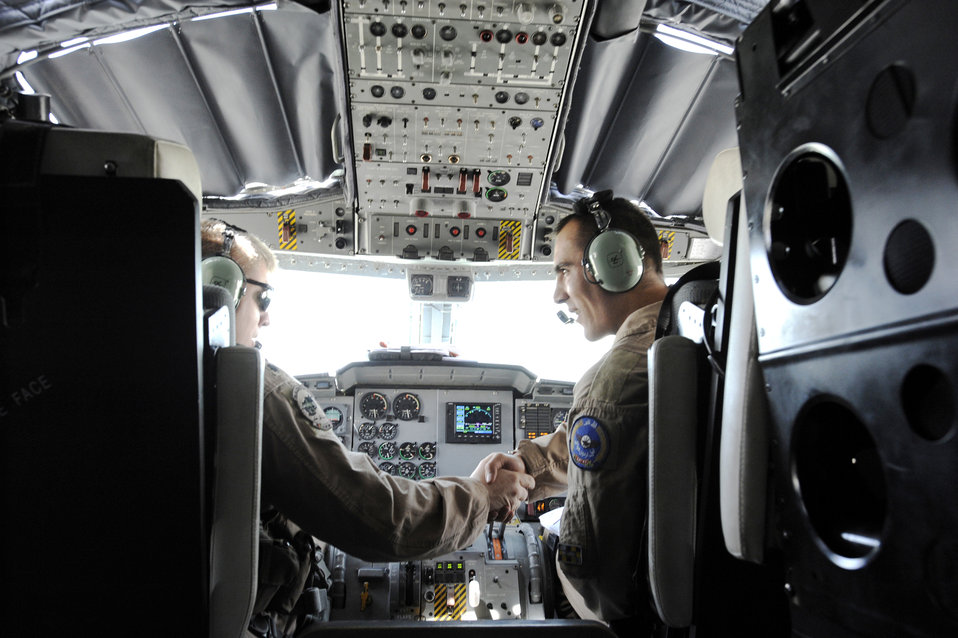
Airmen help Afghans fly C-27 mission

Lt. Col. James Piel (left) and Afghanistan National Army Air Corps 1st Lt. Faiz M. Ramaki shake hands after a successful landing of a C-27 Spartan March 24, 2010, at Kandahar Airfield, Afghanistan. Colonel Piel is the 538th Air Expeditionary Advisory Squadron commander and C-27 pilot-mentor. Lieutenant Ramaki is an ANAAC C-27 pilot.